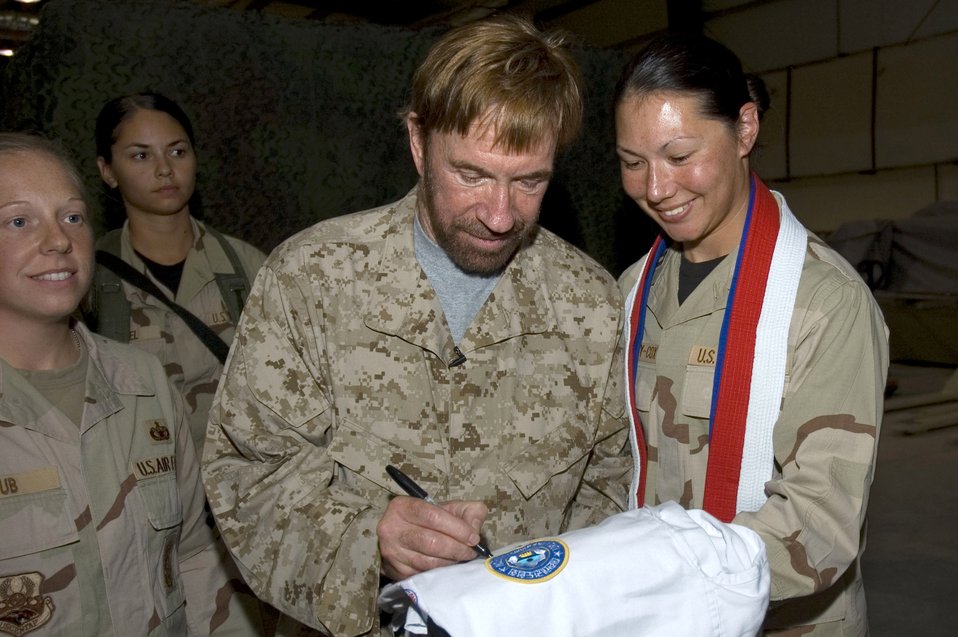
Chuck Norris visits deployed Airmen

Chuck Norris signs an autograph for Capt. Carla Stephany-Cox with the 386th Air Expeditionary Wing in Southwest Asia. The